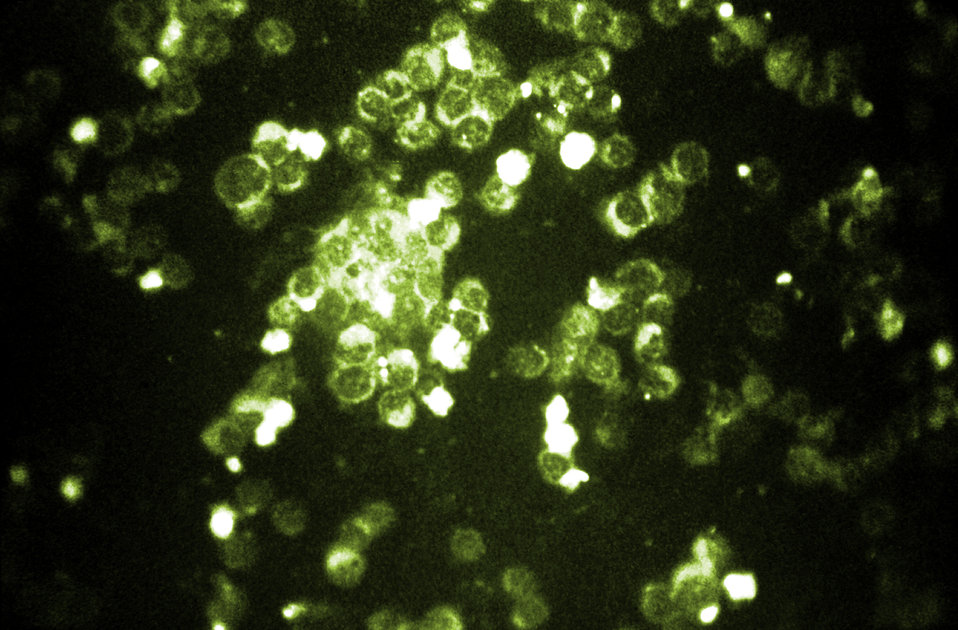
This is the photomicrographic detection of respiratory syncytial virus (RSV) using indirect immunofluorescence technique.